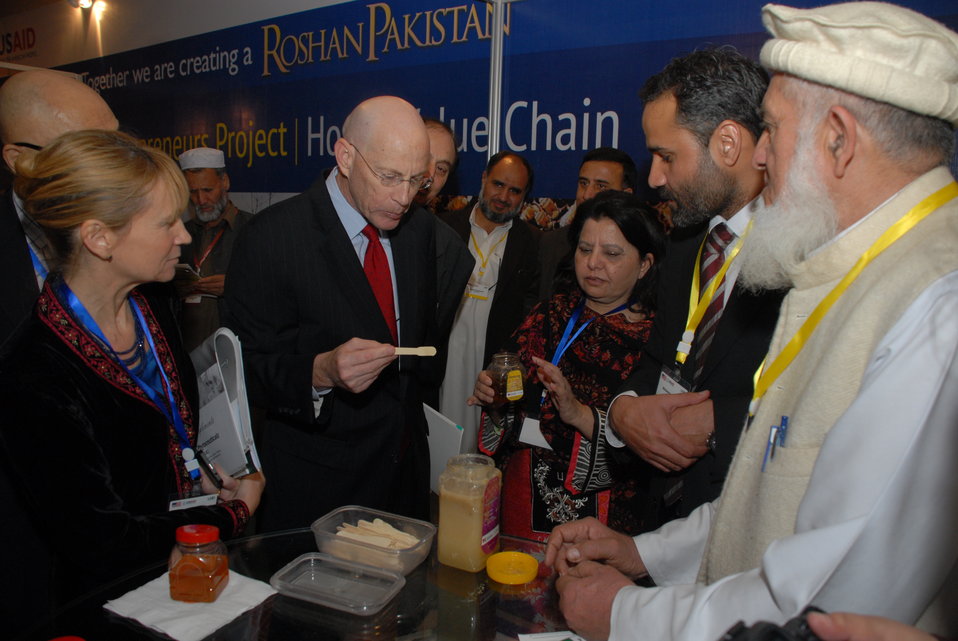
The United States Helps Revitalize Medicinal Plants and Honey Industry in Khyber Pakhtunkhwa 05

Islamabad, February 3, 2014 – The United States, through the U.S. Agency for International Development’s (USAID) Entrepreneurs Project, has trained 24,000 small business owners in the field of medicinal plants and honey. The Medicinal and Aromatic Plants and Honey Industry conference on February 3 featured discussions aimed at developing the medicinal plant and honey sector in Pakistan. Plant collectors and bee-keepers discussed business opportunities with buyers and service providers.